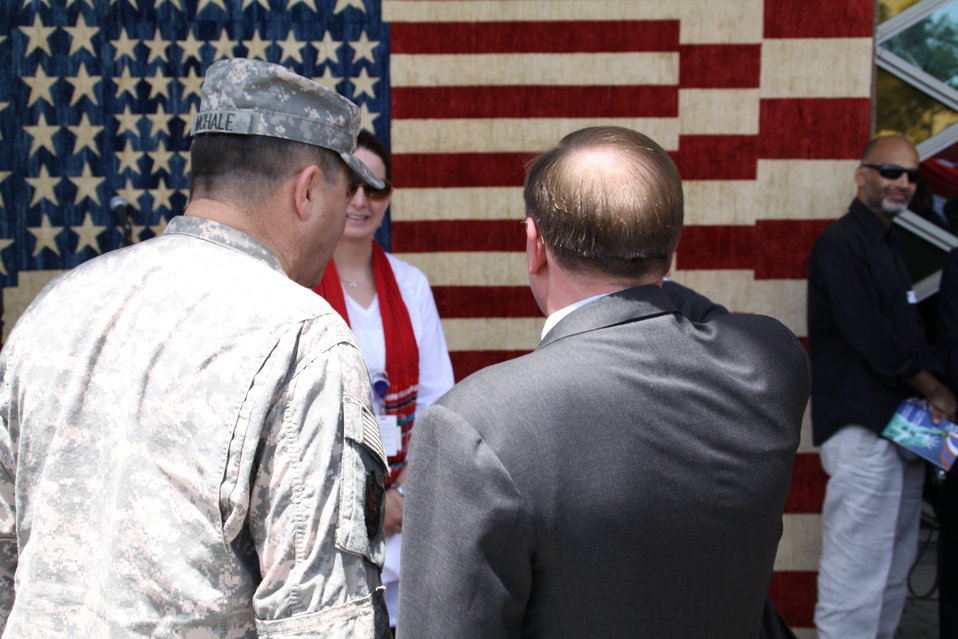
Kabul Official July 4th Celebration